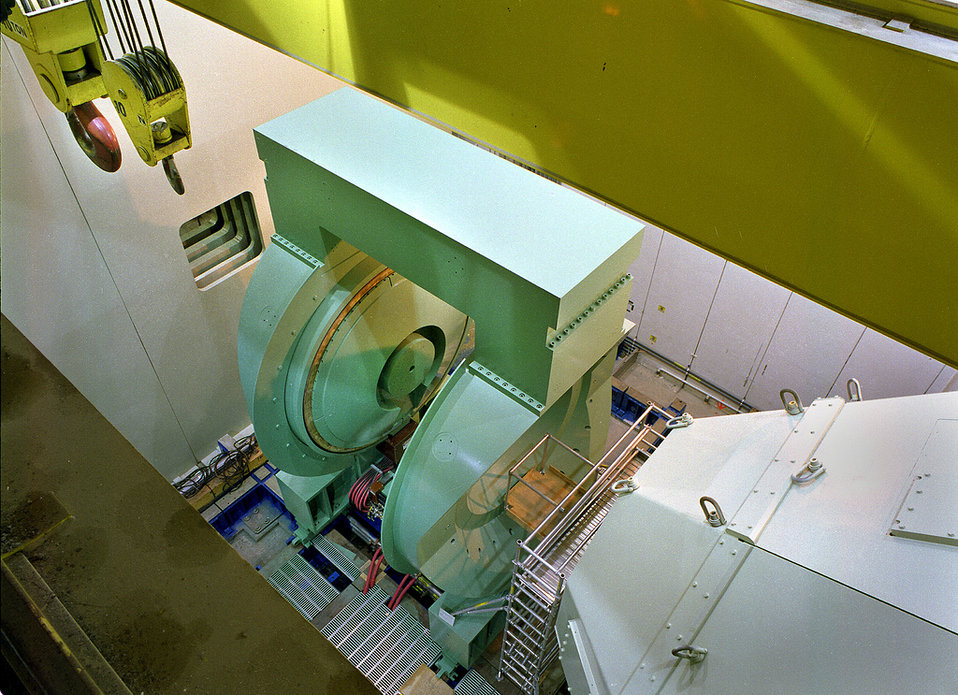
The Phenix detector at BNL Relativistic Heavy Ion Collider (RHIC) records many different particles emerging from RHIC collisions, including photons, electrons, muons and quark-containing particles called hardrons.